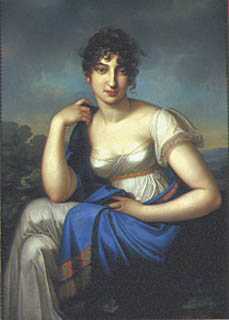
Amalie Beer